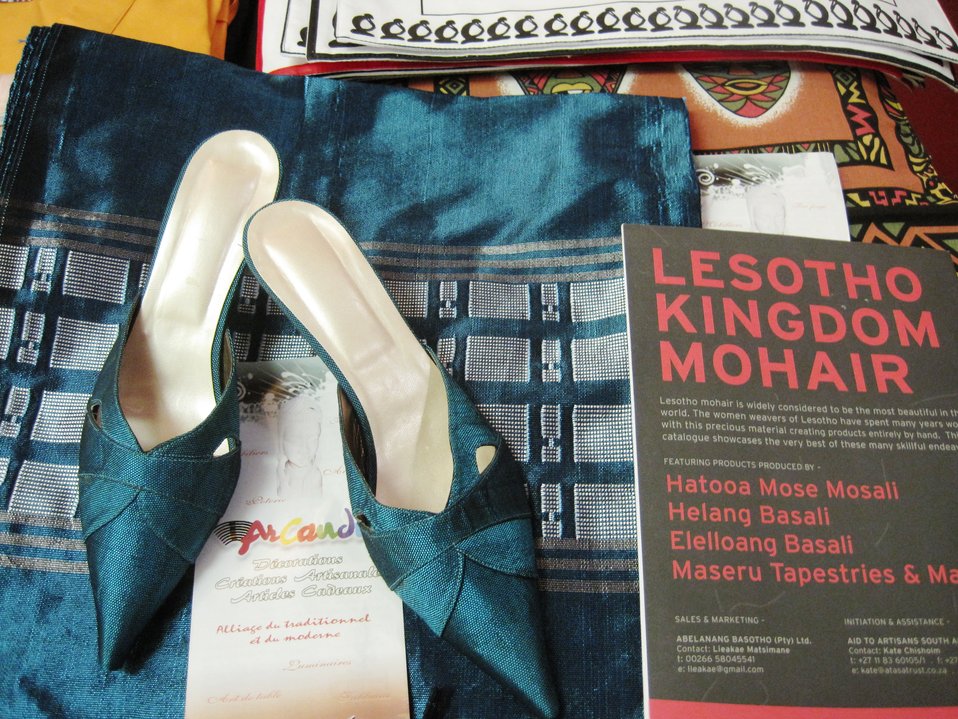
AGOA Forum participants display products in Kansas City, Missouri, on August 4, 2010.